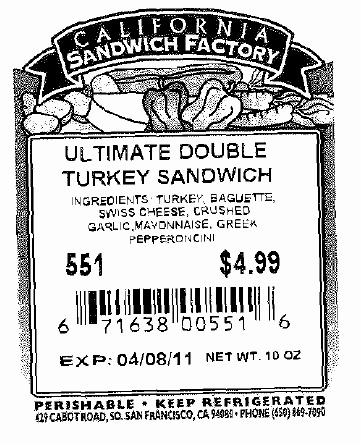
RECALLED - Sandwiches

April 12, 2011 - Product Recall - A-1 Sandwich Company Voluntarily Recalls Sandwiches with Undeclared Allergens.